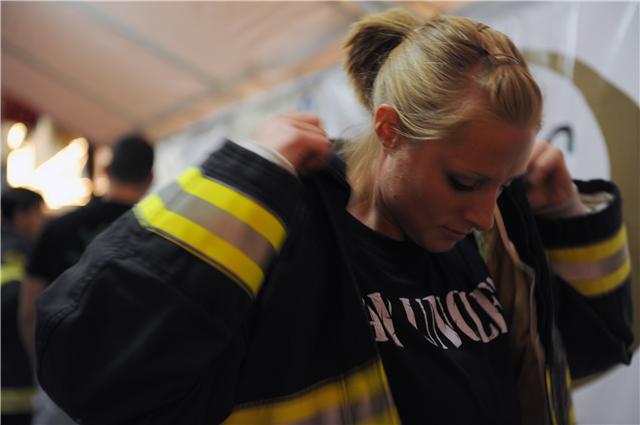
Gearing up

Staff Sgt. Jessica Packard puts on her full bunker gear, including an air-breathing apparatus, before she competes in the individual relay event Nov. 19, 2009, at the Scott Firefighter Combat Challenge in Las Vegas. Sergeant Packard took 3rd place overall in the female individual competition. She is stationed at Goodfellow Air Force Base, Texas.